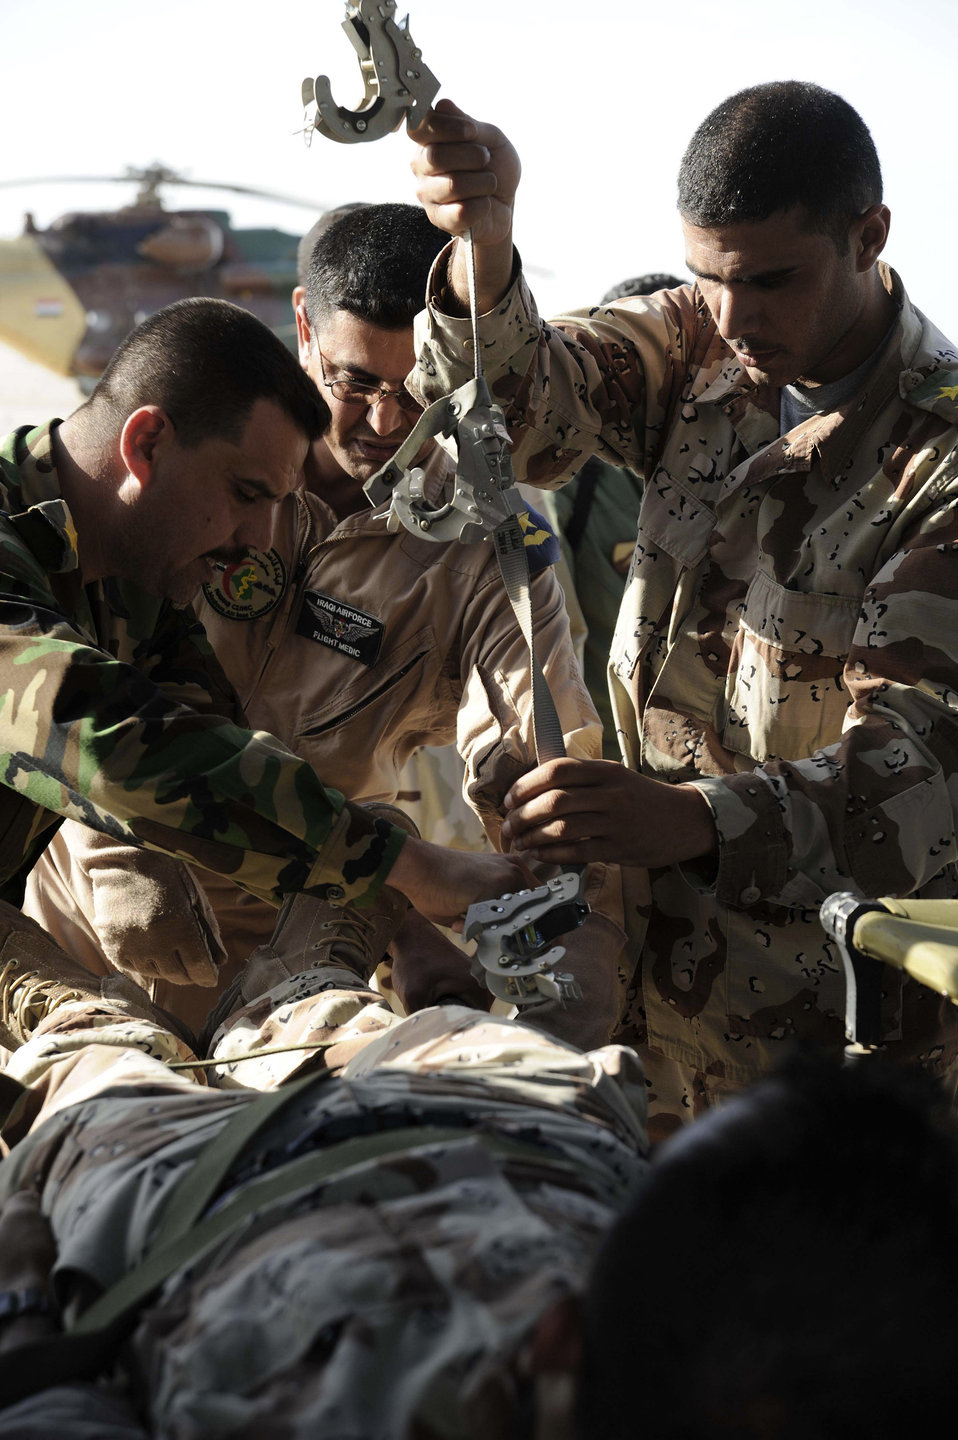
Air Force flight surgeons train Iraqi counterparts

Iraqi air force Lt. Amar instructs Iraqi air force and Iraqi army members how to strap in a person on a litter inside a UH-1 Huey during the aeromedical evacuation class at the Flight Surgeon Course April 20 at New al-Muthana Air Base, Iraq. The training is teaching the Iraqis how to convert a UH-1 and a C-130 Hercules from a passenger transport to an aeromedical evacuation medevac transport. Lieutenant Amar is a flight nurse at the New al-Muthana Air Base clinic.